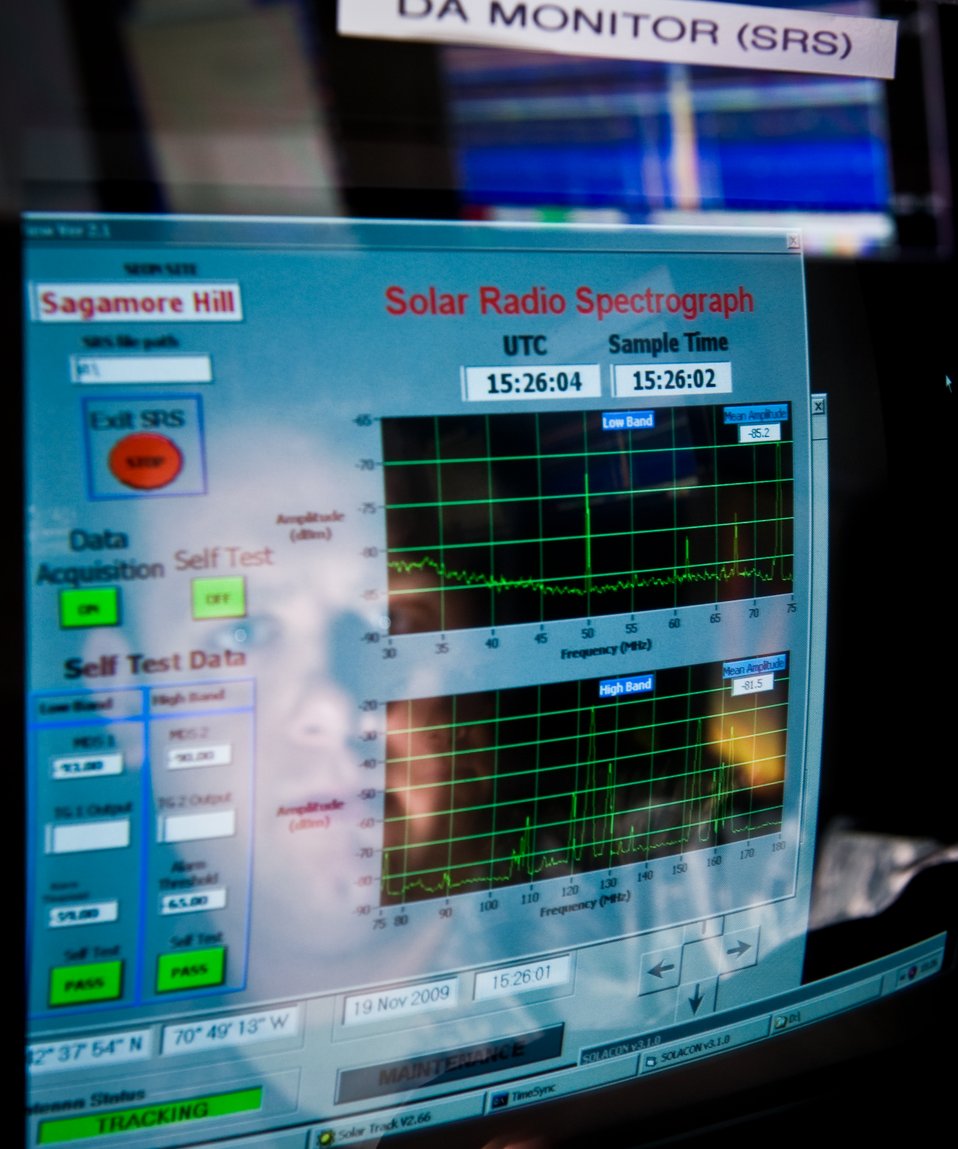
Sun spots and spikes

During training, Staff Sgt. Wesley Magnus analyzes a spike on the sun that is displayed on the solar radio spectrograph Nov. 18, 2009, at the Sagamore Hill Solar Observatory in Hamilton, Mass. The observatory operates around the clock to obtain scientific observations of the sun.